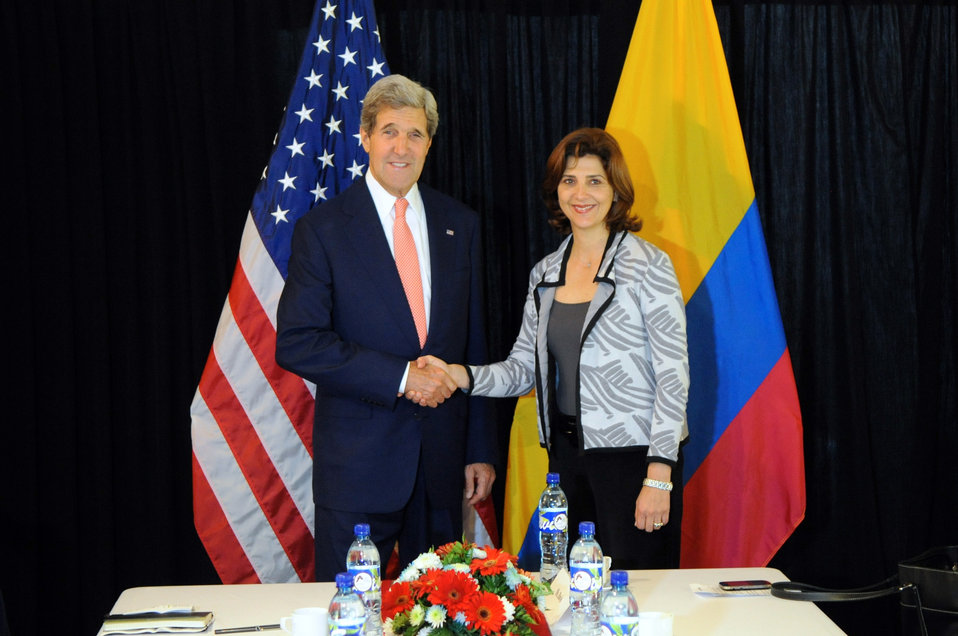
Secretary Kerry Meets With Colombian Foreign Minister Holguin

U.S. Secretary of State John kerry holds a bilateral meeting with Colombian Foreign Minister Maria Angela Holguin on the sidelines of the General Assembly of the Organization of American States in Antigua, Guatemala, on June 5, 2013.